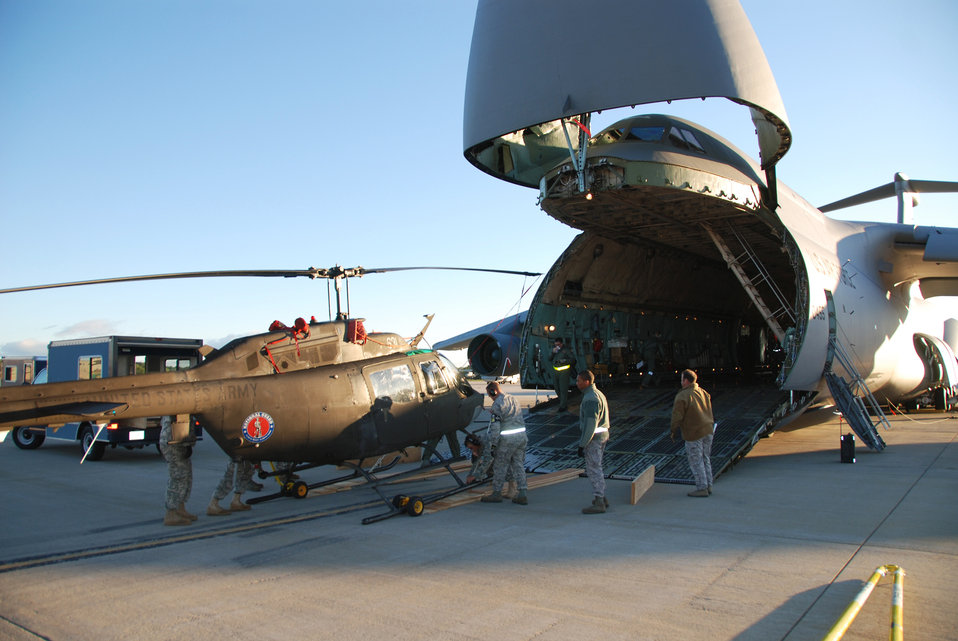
Air Force lift for 'Show and Tell'

Soldiers unload an OH-58 Kiowa from a C-5 Galaxy Sept.17, 2010, at Cape Town International Airport, South Africa. The Soldiers are with the with the New York Army National Guard's 1-224 Aviation Security and Support Battalion. The guard unit is participating in the African Aerospace Defence Exposition 2010.